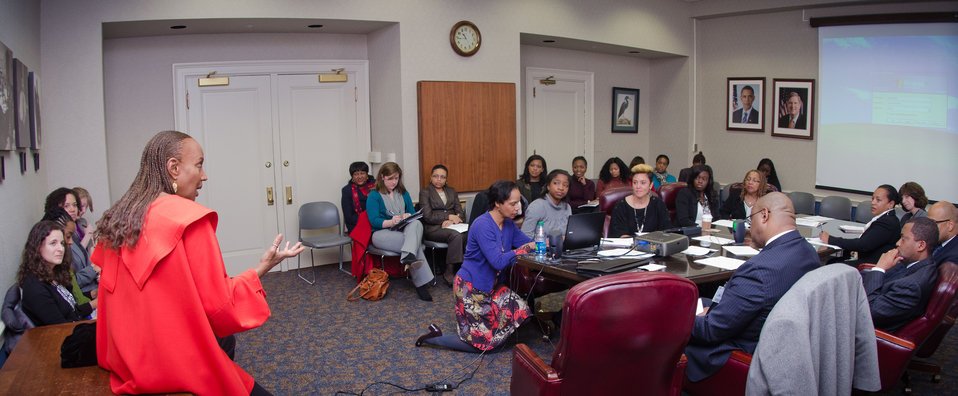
National CARES Mentoring Movement founder and Editor-in-Chief Emeritus, Essence magazine, Susan Taylor (red coat), met for a cross-departmental discussion with Department of Agriculture and Department of Energy personnel in the Whitten Building, U.S. Department of Agriculture, in Washington, D.C., on Tuesday, February 28, 2012. This not-for-profit organization is dedicated to recruiting and connecting mentors with local youth and mentoring organizations to help guide under-resourced children to academic and social success across the country. This discussion provided a continuation of the White House Policy in Action conference that took place in November 2011. The focus of the discussion was about how existing federal programs and administration priorities can be leveraged with her organization, especially as it relates to science, technology, engineering and mathematics (STEM) literacy, education and rural youth.